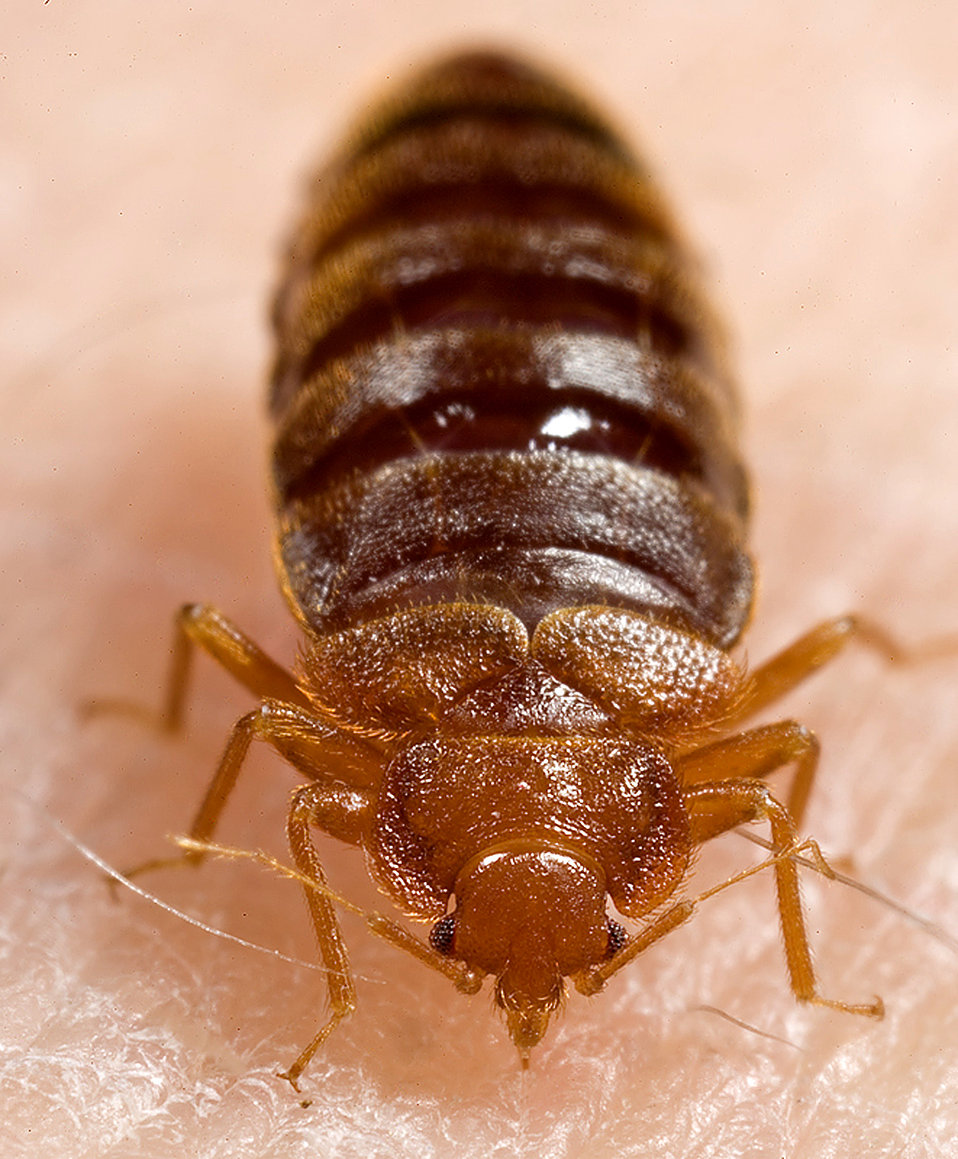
This 2006 photograph depicted an anterosuperior view, i.e., from the front and above, of an adult bedbug, Cimex lectularius, as it was in the process of ingesting a blood meal from the arm of a 'voluntary' human host.Bedbugs are not vectors in nature of any known human disease. Although some disease organisms have been recovered from bedbugs under laboratory conditions, none have been shown to be transmitted by bedbugs outside of the laboratory.The common bedbug C. lectularius is a wingless, red-brown, blood-sucking insect that grows up to 7 mm in length and has a lifespan from 4 months up to 1 year. Bedbugs hide in cracks and crevices in beds, wooden furniture, floors, and walls during the daytime and emerge at night to feed on their preferred host, humans.